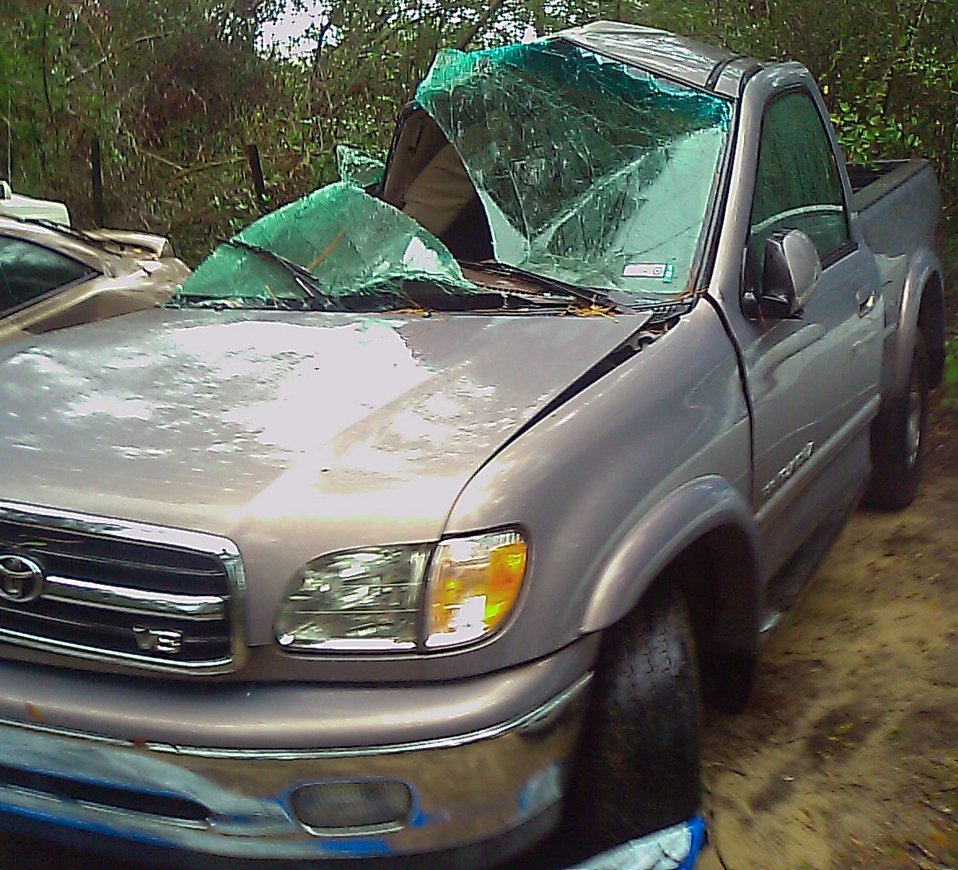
Respect the road

Capt. Tobias Switzer was driving this truck on Interstate 10 near DeFuniak Springs, Fla., when it hydroplaned and smashed into a tree Nov. 26. He survived the accident, but the truck was considered a total loss. Captain Switzer is with the 1st Special Operations Group at Hurlburt Field, Fla.